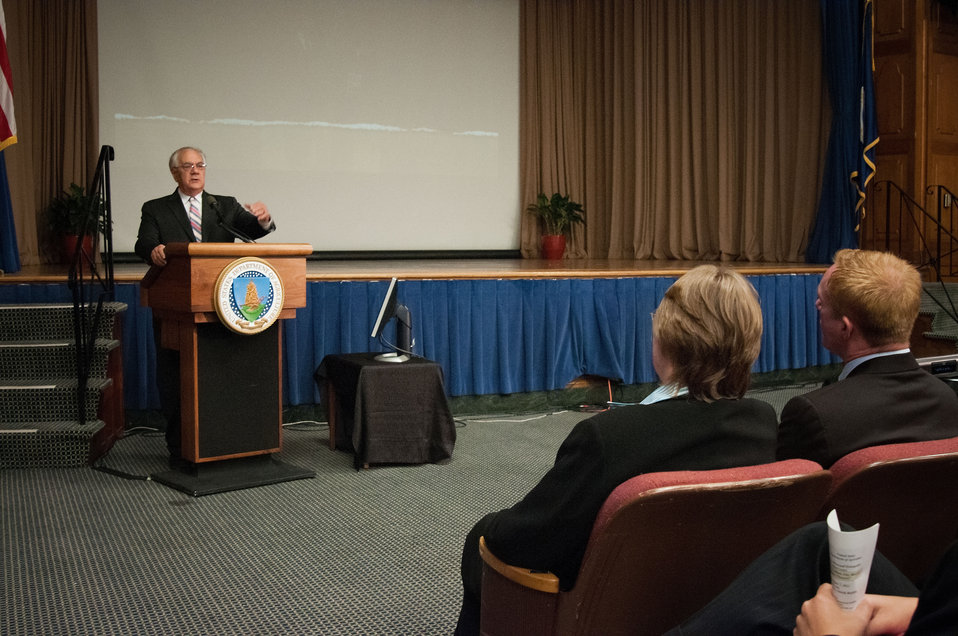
Rep. Barney Frank, First Congressional District of Massachusetts and Ranking Member of the House Financial Services Committee was the keynote speaker at the Lesbian, Gay, Bisexual and Transgender (LGBT) Pride Observance, “The Sum of Us: Lesbian, Gay, Bisexual and Transgender Pioneers” at the Lesbian, Gay, Bisexual and Transgender (LGBT) Pride Observance, “The Sum of Us: Lesbian, Gay, Bisexual and Transgender Pioneers” at the United States Department of Agriculture in Washington, D.C., Thursday, June 7, 2012.